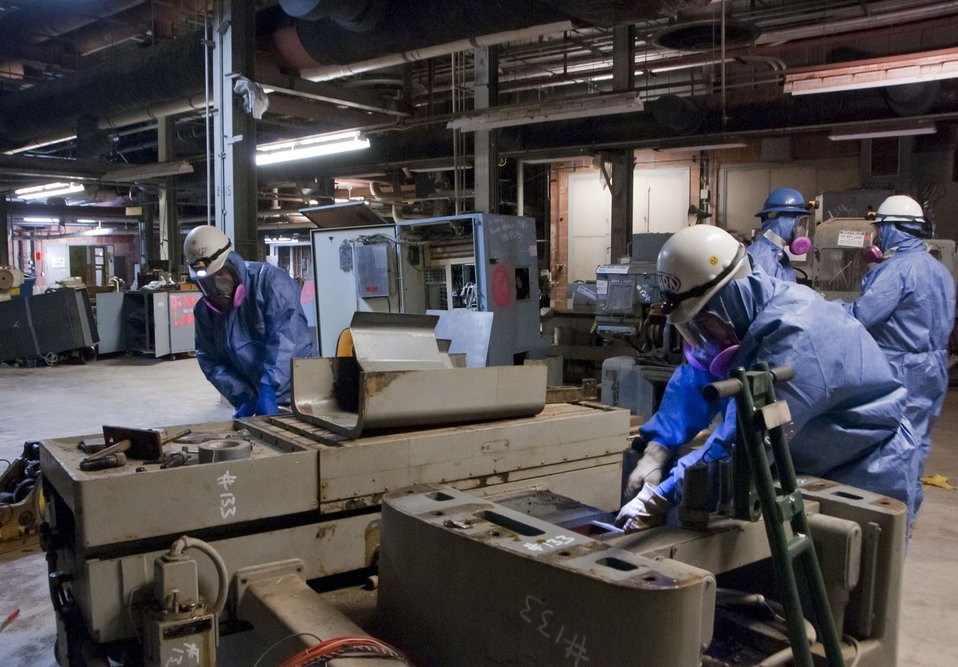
Oak Ridge Alpha 5 cleanup

Workers empty Alpha 5, a 613,000-square-foot facility located at the Y-12 National Security Complex, move the building one step closer to becoming demolition ready.